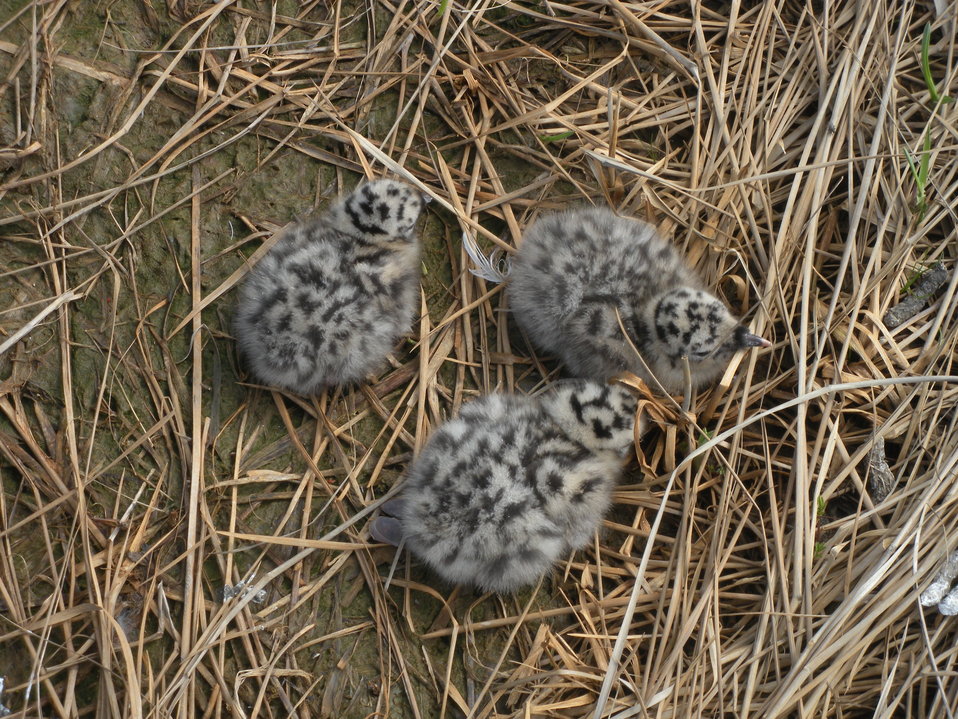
Gull chicks

Yukon Delta NWR